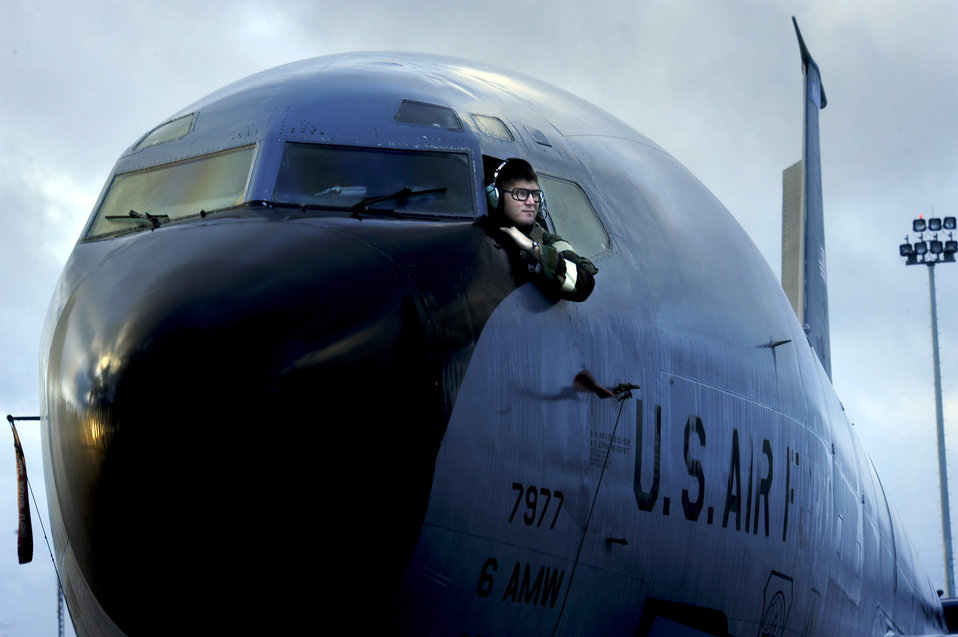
Admiring the view

Senior Airman Adam Rogers looks out the window of a KC-135 Stratotanker Jan 26, 2011, at the Savannah Combat Readiness Training Center in Savannah, Ga. Airman Rogers is a member of the 112th Aircraft Maintenance Squadron.